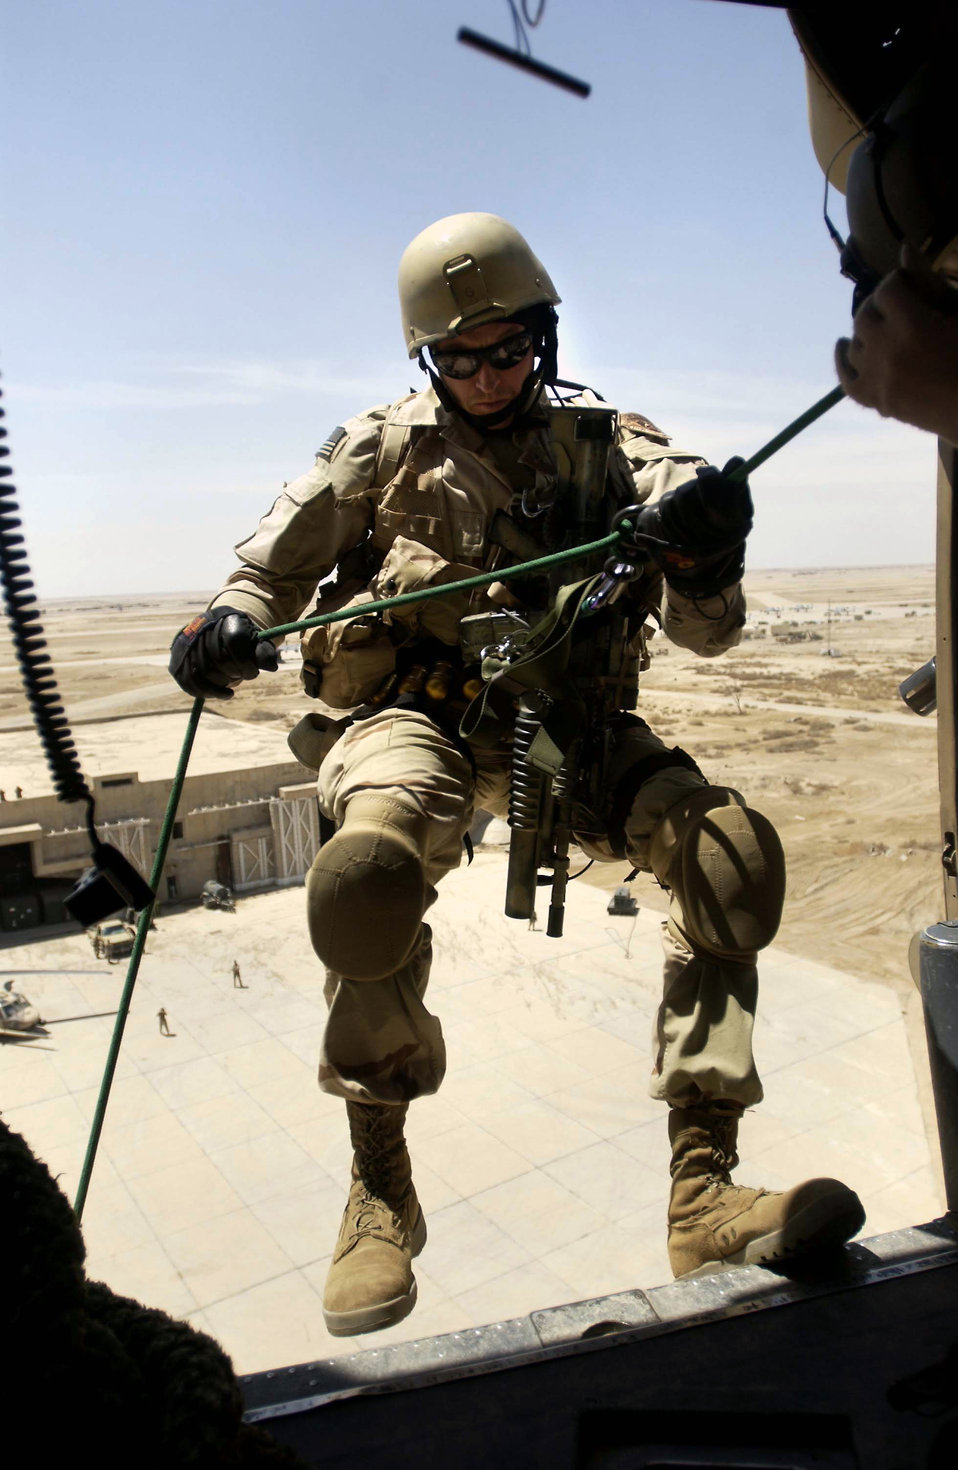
The quick way down

OPERATION IRAQI FREEDOM -- A Pararescueman from the 304th Rescue Squadron prepares to rappel from an HH-60G Pave Hawk April 18, 2003 at Tallil Air Base, Iraq during Operation Iraqi Freedom.